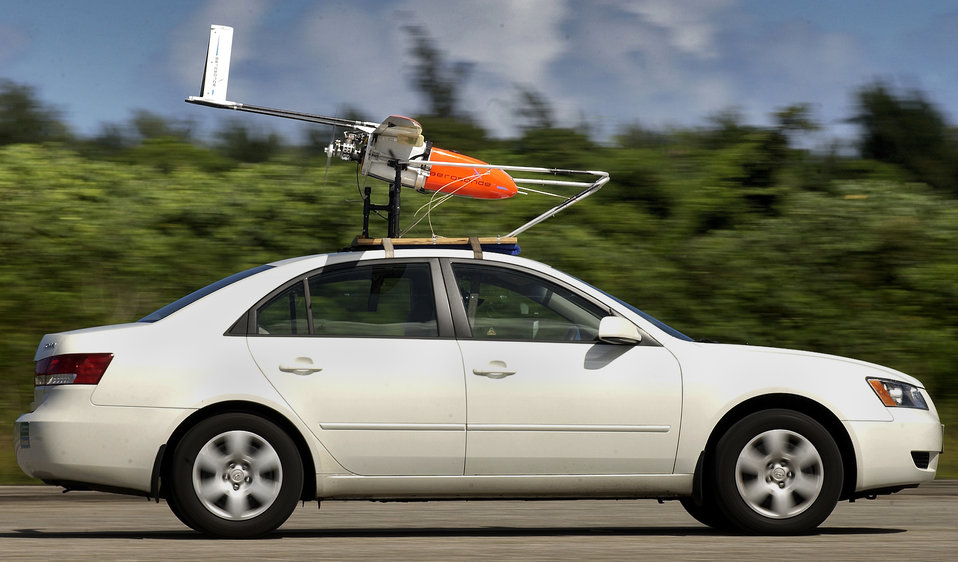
Crazy take off

ANDERSEN AIR FORCE BASE, Guam -- A Weatherscout weather unmanned aerial vehicle takes off on a test flight Oct. 18. Pilots launch the 30-pound aircraft from cars at 40 mph.